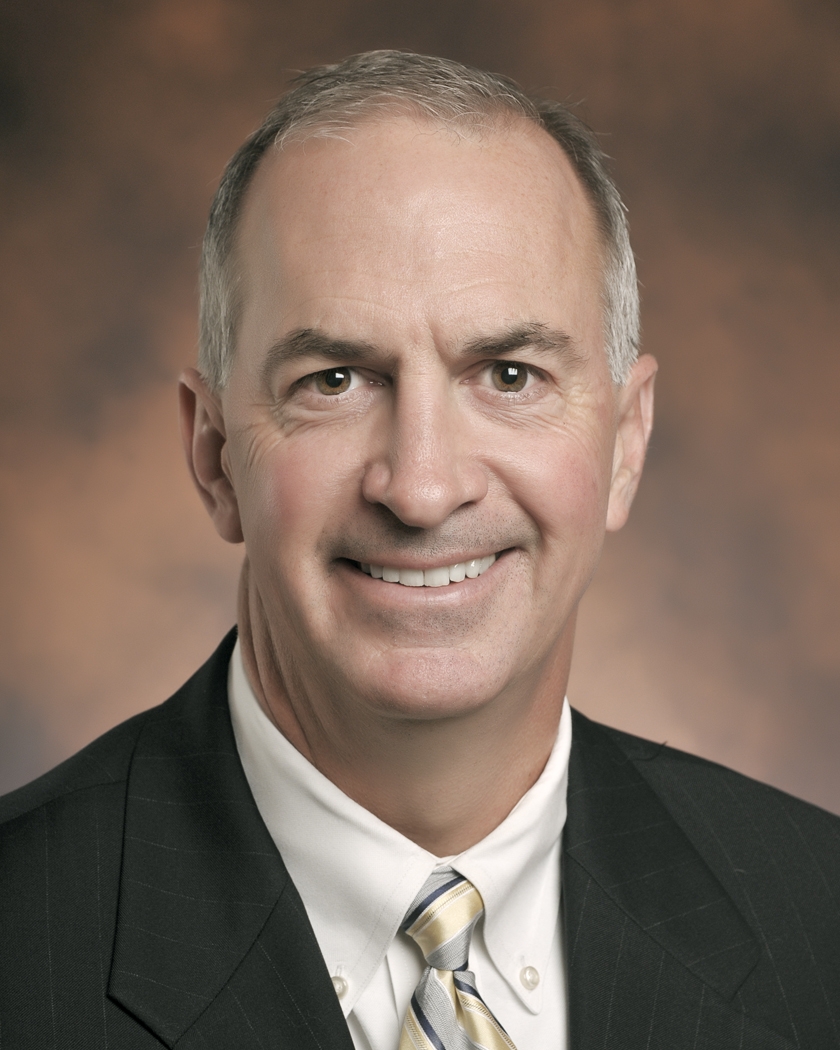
Matthew Moury - EM DAS for Safety and Security

Matthew Moury was appointed the EM Deputy Assistant Secretary for Safety and Security Program Oct. 9, 2011. Moury has 30 years of experience in the nuclear field, including almost 20 years at the Defense Nuclear Facilities Safety Board (DNFSB). While at the Board he has led a wide variety of safety-related areas, such as Integrated Safety Management (ISM), facility design and construction, DOE directives, facility startup activities, and quality assurance.